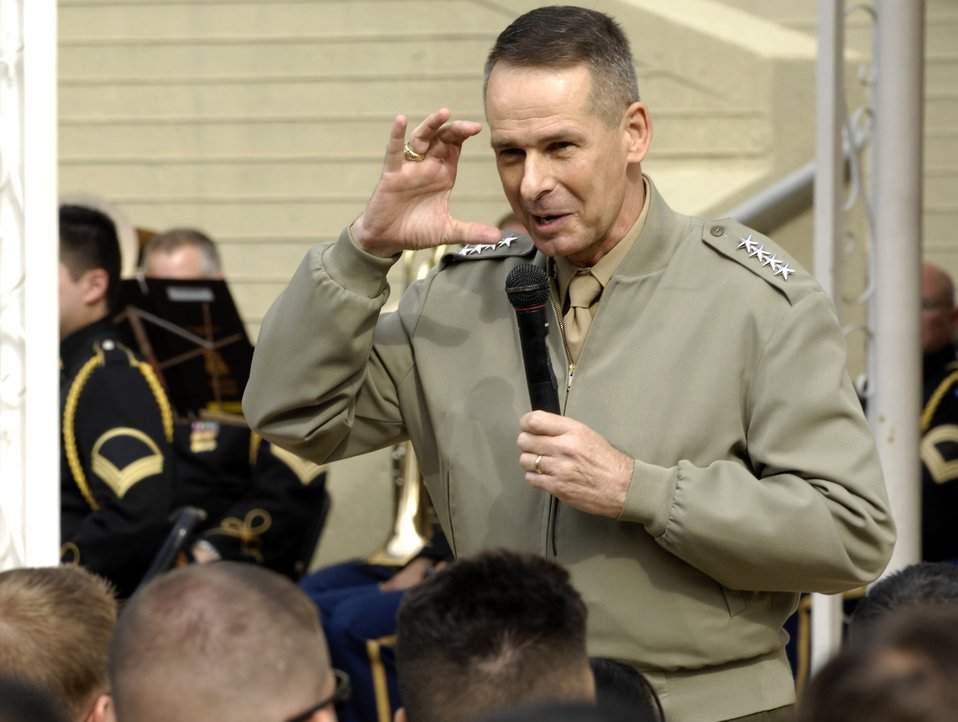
Farewell from the chairman

Marine Corps Gen. Peter Pace, chairman of the Joint Chiefs of Staff, thanks enlisted servicemembers for their dedication and bids them farewell during an enlisted call at the Pentagon Sept. 20.